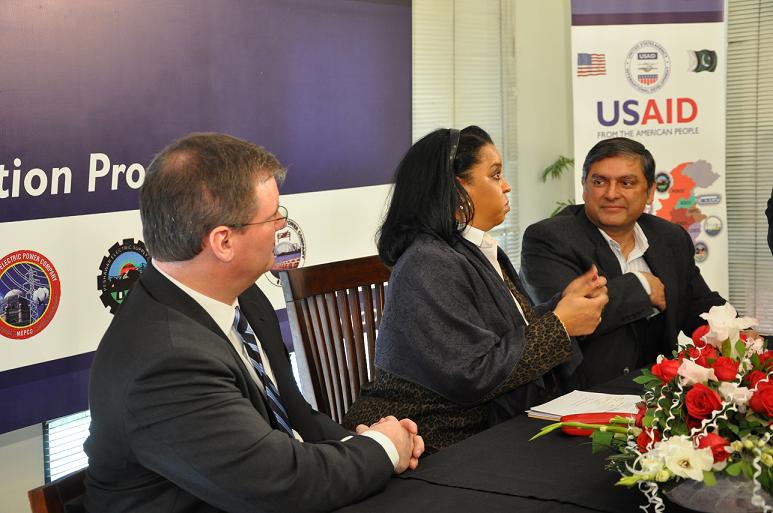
Gail Spence talking to event participant